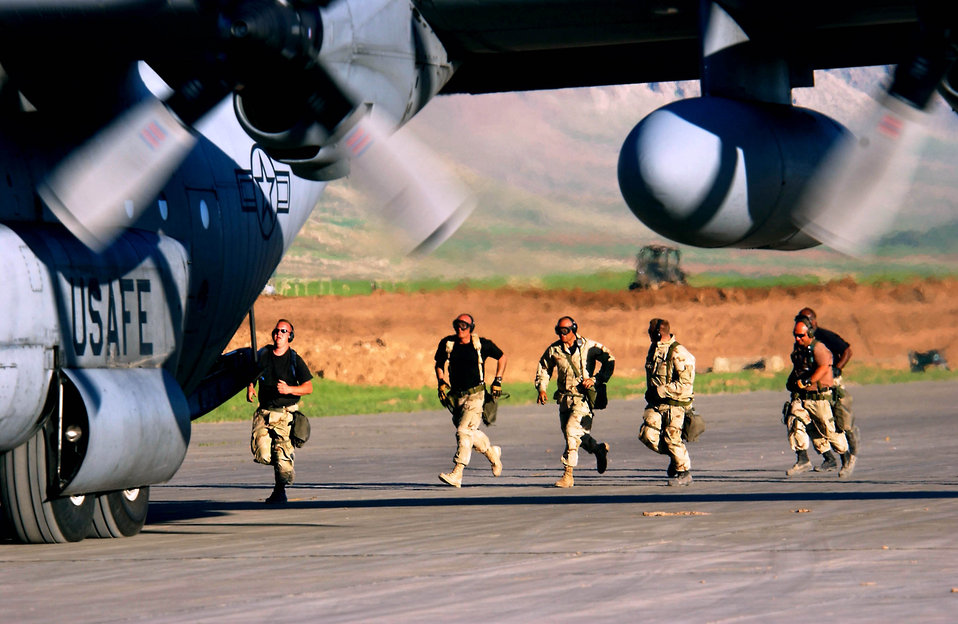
On the run

OPERATION IRAQI FREEDOM -- With aircraft landing day and night at Bashur Airfield in northern Iraq, members of the 86th Air Mobility Squadron must stay on the run to offload them quickly. In the two weeks the airmen have been at the base, they have offloaded more than 10 million pounds of cargo.